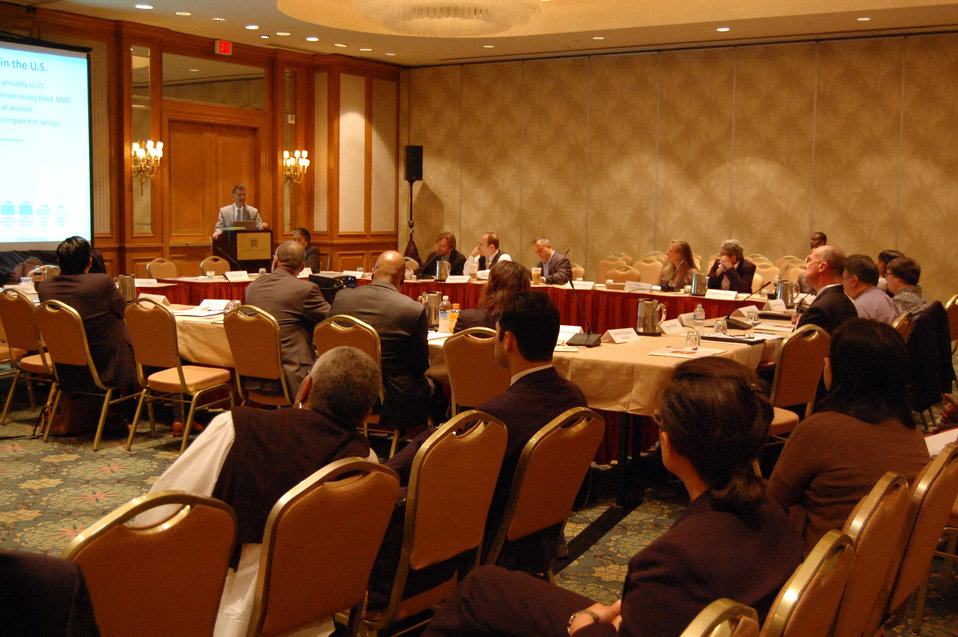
PACHA conf045